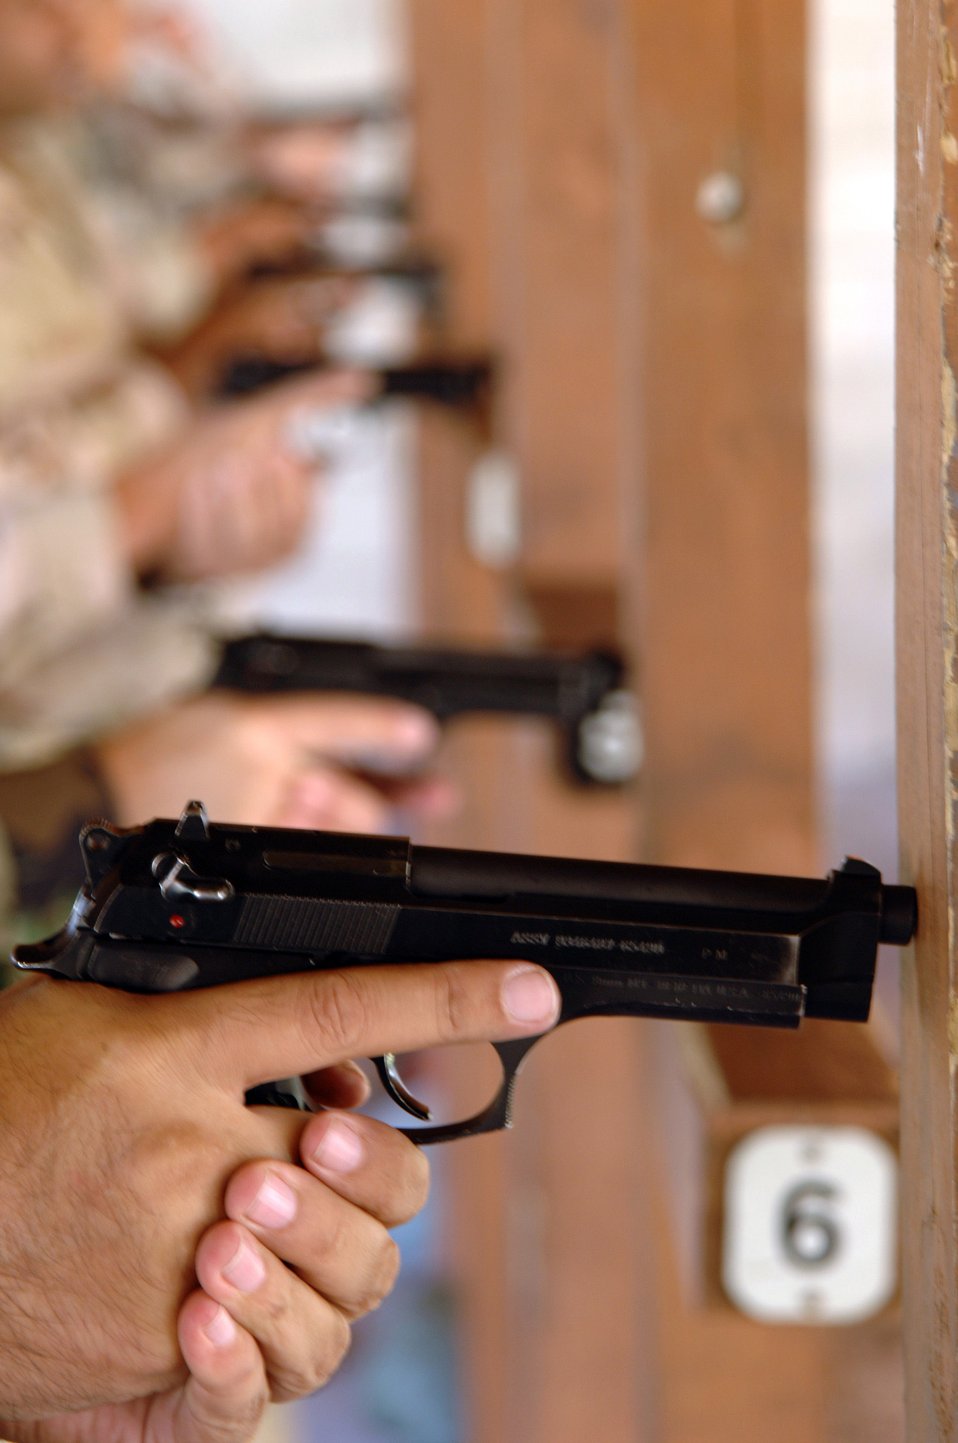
Training ensures Airmen confident with weapons

Servicemembers take safety measures before firing the Beretta M-9 pistol during a combat arms training and maintenance class at Lajes Field, Azores, April 26. Combat arms instructors teach servicemembers and Department of Defense civilians how to maintain and safely operate fire arms.